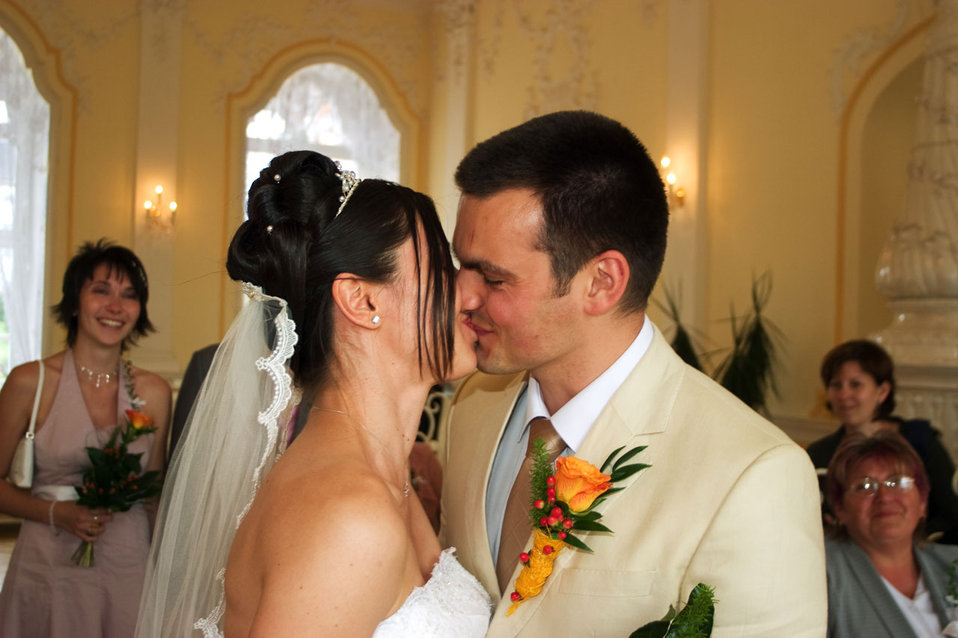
First kiss as a husband and wife.